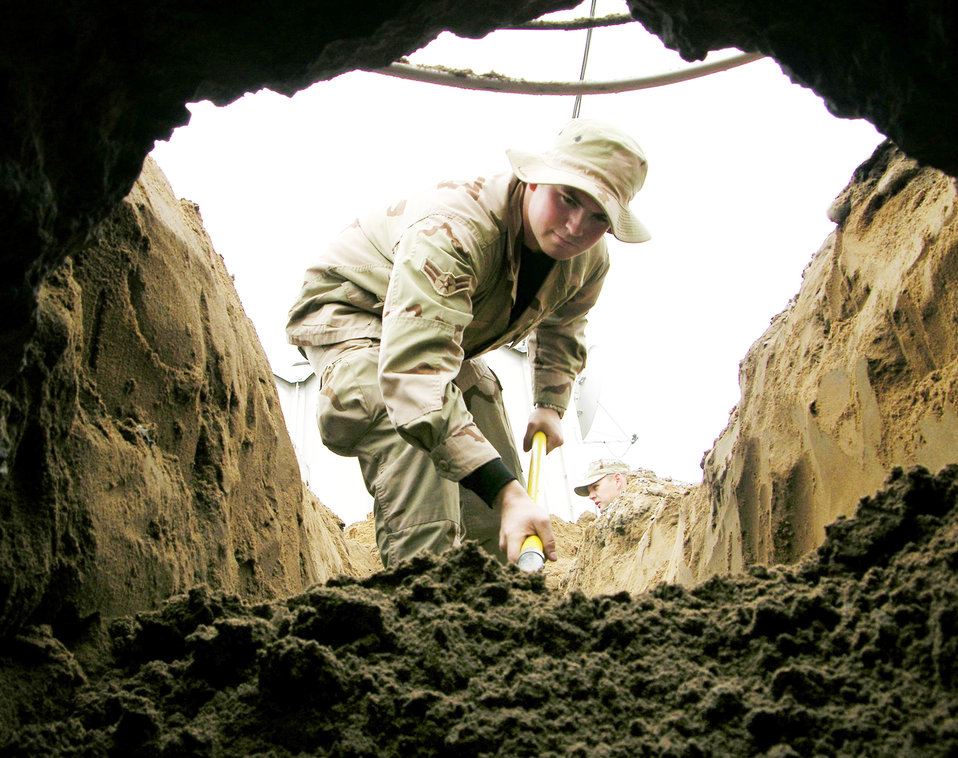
In the trenches

MANAS AIR BASE, Kyrgyzstan (AFPN) -- Airman 1st Class Scott Helton puts the finishing touches on a sewage pipe trench during the renovation of the 367th Air Expeditionary Wing headquarters here. The reconstruction would have cost $250,000 but the 367th Expeditionary Civil Engineer Squadron Airmen are doing the work in-house for $50,000. Airman Helton, a utilities journeyman with the 367th ECES, is deployed from Whiteman Air Force Base, Mo.